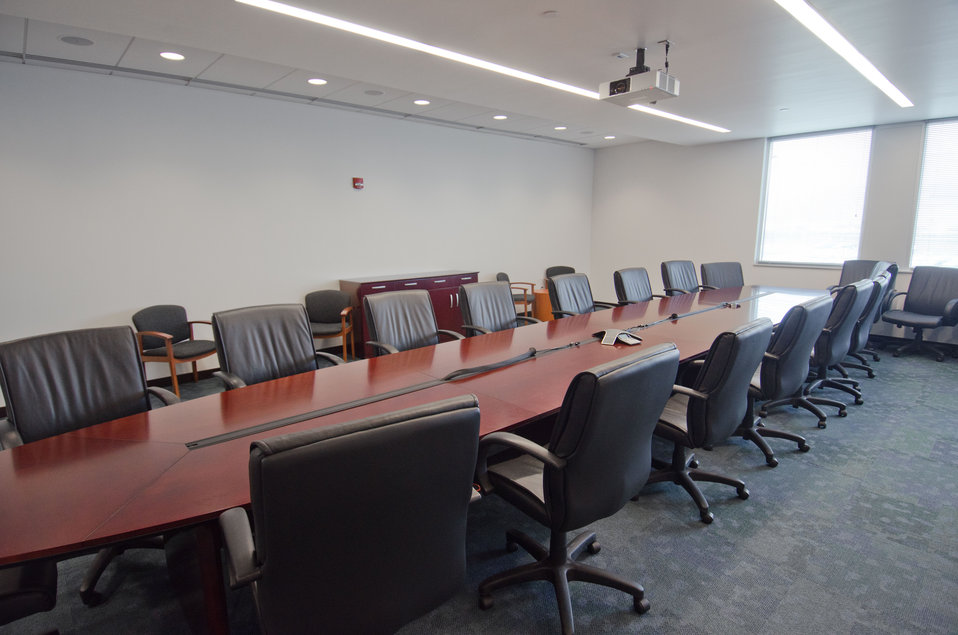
Executive multimedia conference room at Unilife, a medical device company focused on the design, development, manufacture and supply of a proprietary range of retractable syringes on Monday, April 20, 2011 in York, PA. In partnership with Sanofi-aventis, Mikron Group, and MDMA, U.S. Department of Agriculture Rural Development was able to guarantee $18,000,000 through its Business and Industry Guaranteed Loan Program to construct a custom-built, global headquarters and commercial production facility in York, Pennsylvania. The 165,000 sq. ft. facility was completed in late 2010 and can accommodate future growth as well as the Company’s projected demand from pharmaceutical and healthcare companies for its proprietary range of Unifill ready-to-fill (prefilled) and Unitract general purpose safety syringes. Stage one of the facility is designed to accommodate the production of up to 400 million Unilife syringes per year and to meet stringent pharmaceutical standards for primary drug containers. Adjacent to the manufacturing facility is Unilife’s global headquarters that support administrative, marketing, new product development, quality laboratories and other operational functions. Unilife, which first arrived in Pennsylvania in 2006. The company has doubled its employees for the past three years. There are approximately 150 employees, and they expect to double the number by 2015.